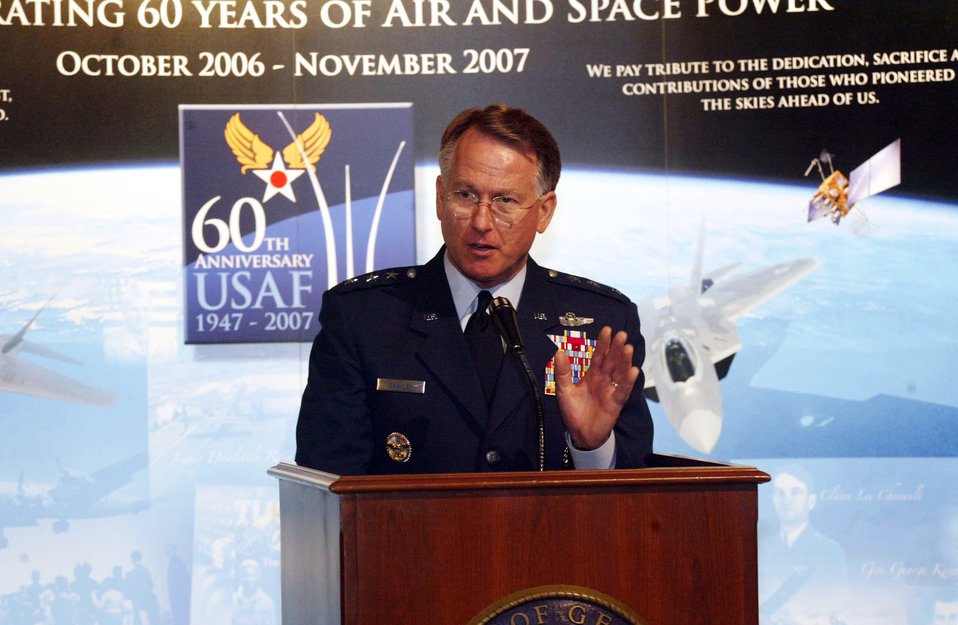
Atlanta kicks off 'Heritage to Horizons' celebration

Lt. Gen. John A. Bradley speaks to the